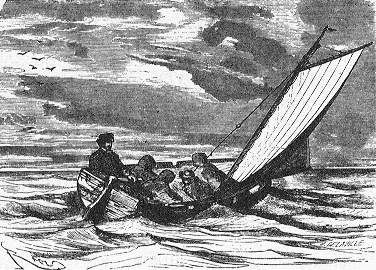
An illustration from Jules Verne's novel 'Journeys and Adventures of Captain Hatteras', part II: 'The Field of Ice' drawn by Édouard Riou and/or Henri de Montaut. Polski: Ilustracja powieści Juliusza Verne'a 'Podróże i przygody kapitana Hatterasa', części II: 'Pustynia lodowa' autorstwa Édouarda Riou i/lub Henri de Montauta. Français : Jules Verne: 'Voyages et aventures du capitaine Hatteras - Le désert de glace', Édouard Riou et Henri de Montaut.